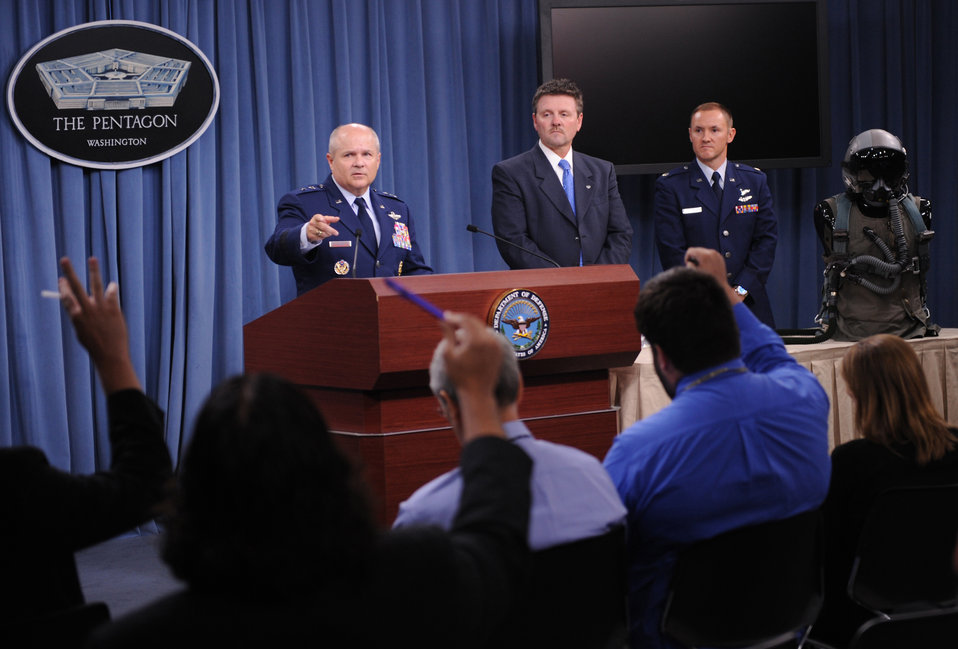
Air Force assures F-22 readiness following extensive testing

Maj. Gen. Charles Lyon answers questions in Washington, D.C., July 31, 2012, regarding the update on the Air Force Scientific Advisory Board study in life support systems installed on the F-22 Raptor.